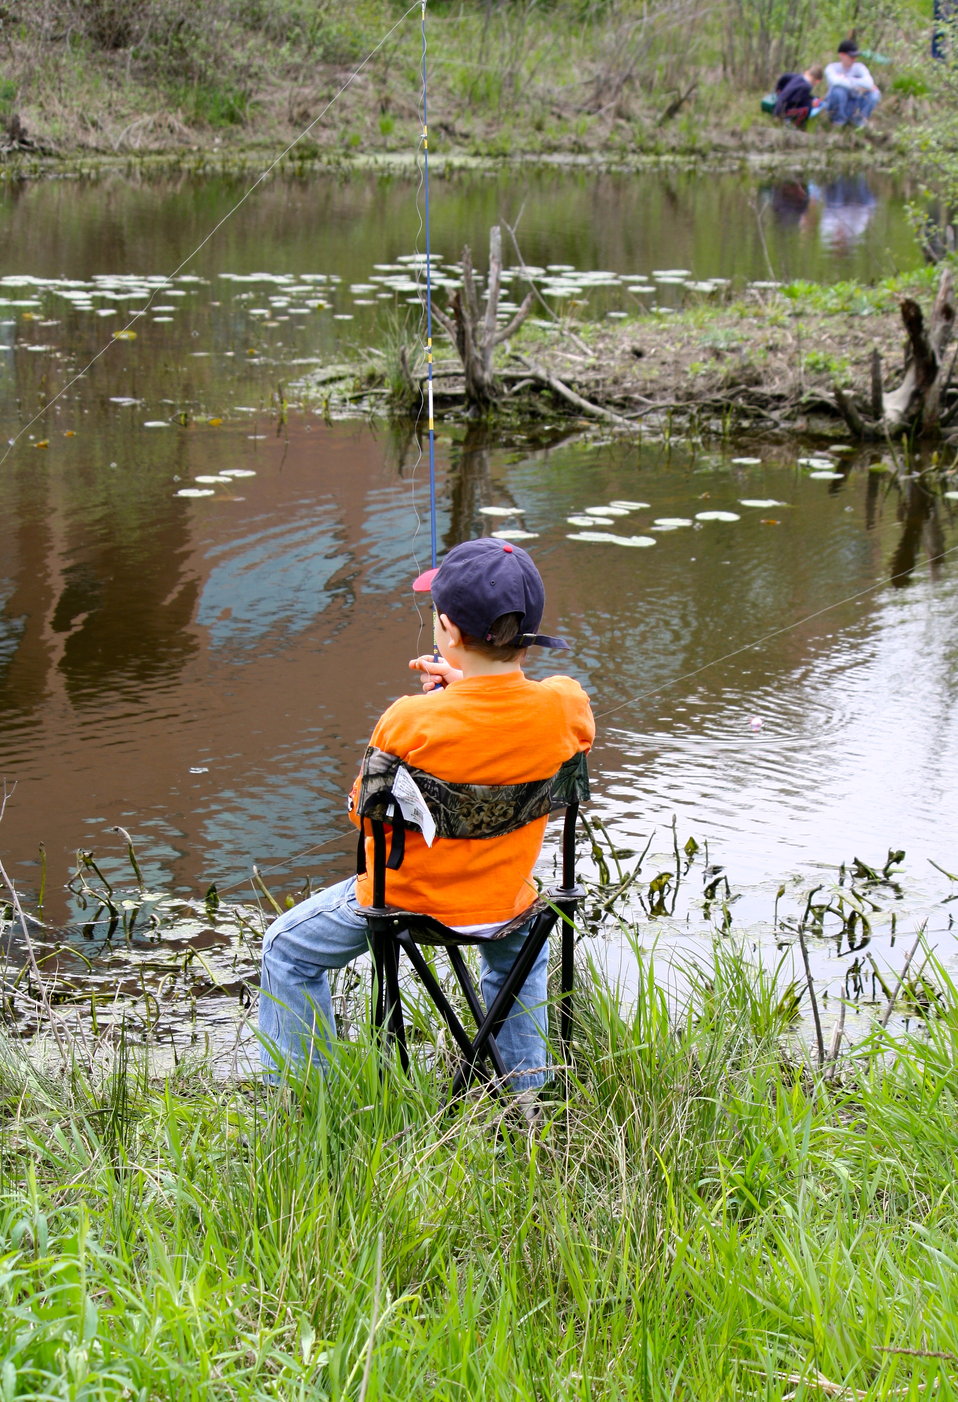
Boy Fishing

Fishing Derby held at the USFWS regional office in Hadley, MA on May 7, 2011.